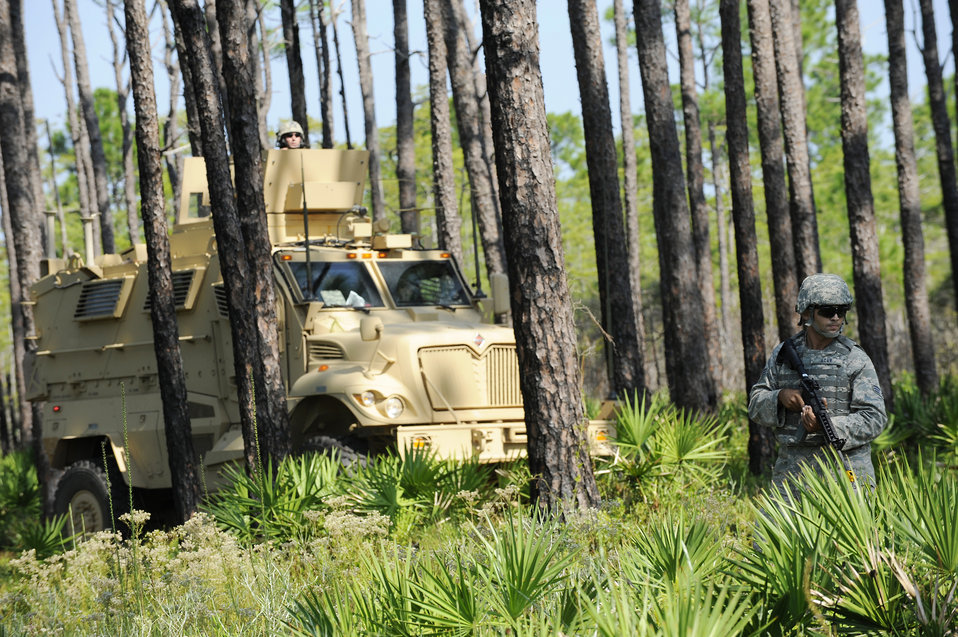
I spy an IED

Senior Airman Serkan Acar searches for improvised explosive devices during counter-IED training Aug. 13 at Hurlburt Field, Fla. The training teaches Airmen how to handle IED threats while performing missions outside the wire. Airman Acar is an electrician assigned to the 823rd RED HORSE Squadron.